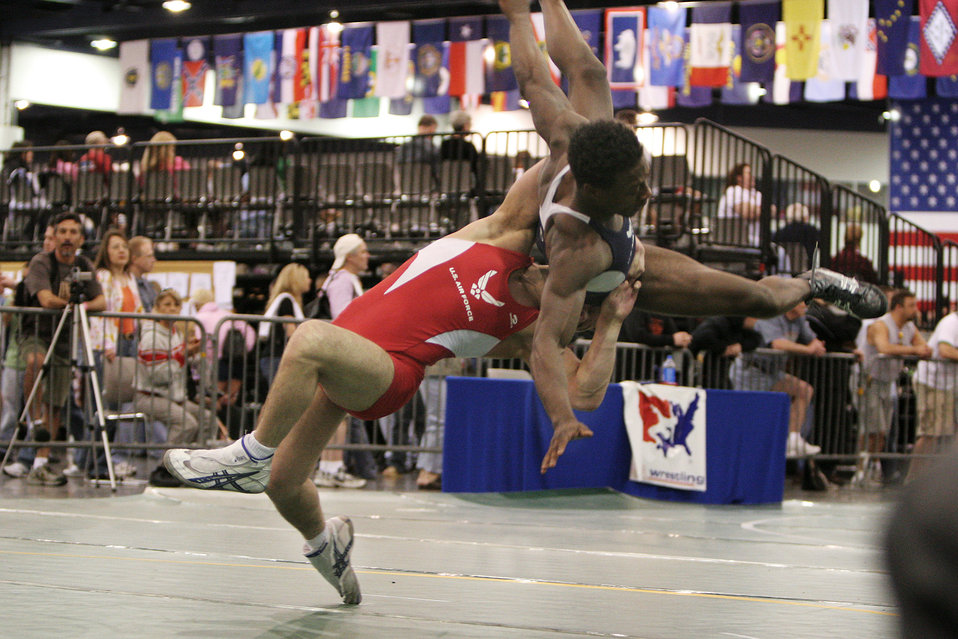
Air Force wrestlers compete in Las Vegas tourney

Senior Airman Jared Moreland performs a lift and toss on his opponent and fellow teammate Capt. Anthony Brooker at the USA National Senior Men's and Women's Wrestling Championships in Las Vegas on Saturday, April 15, 2006. Captain Brooker recovered and went on to win the match and finish seventh overall. He is stationed at Vandenberg Air Force Base, Calif., and Airman Moreland is at Cannon AFB, N.M.